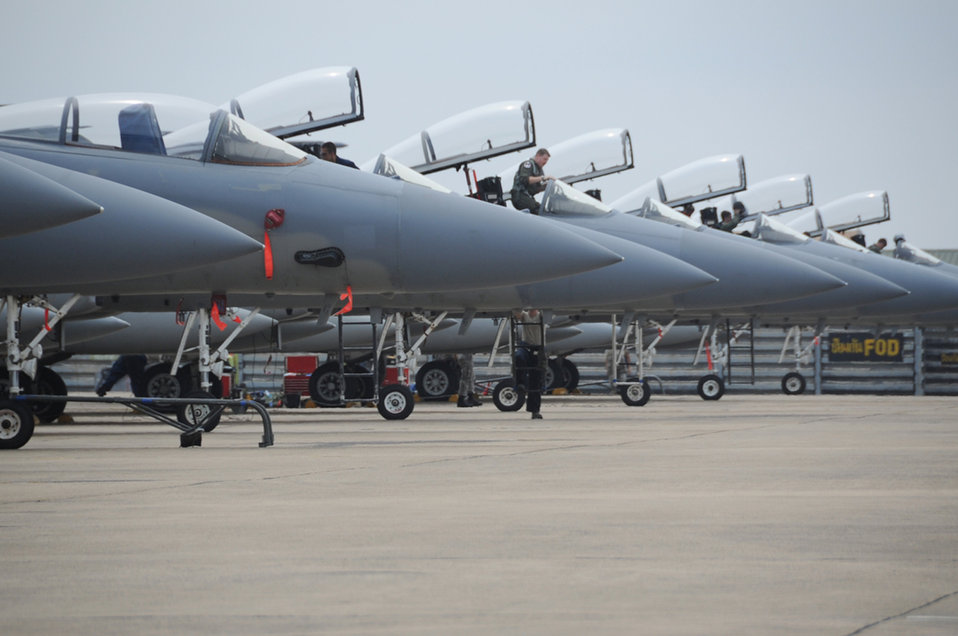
Cope Tiger 2011

F-15 Eagle pilots assigned to the 44th Expeditionary Fighter Squadron at Kadena Air Base, Japan, prepare to depart Korat Royal Air Force Base, Thailand, March 23, 2011, to participate in an exercise scenario during Cope Tiger 2011, which runs from March 14 through 25. Participants of Cope Tiger include the U.S. Air Force, the U.S. Marine Corps, the Royal Thai Air Force, Royal Thai Army and the Republic of Singapore Air Force.